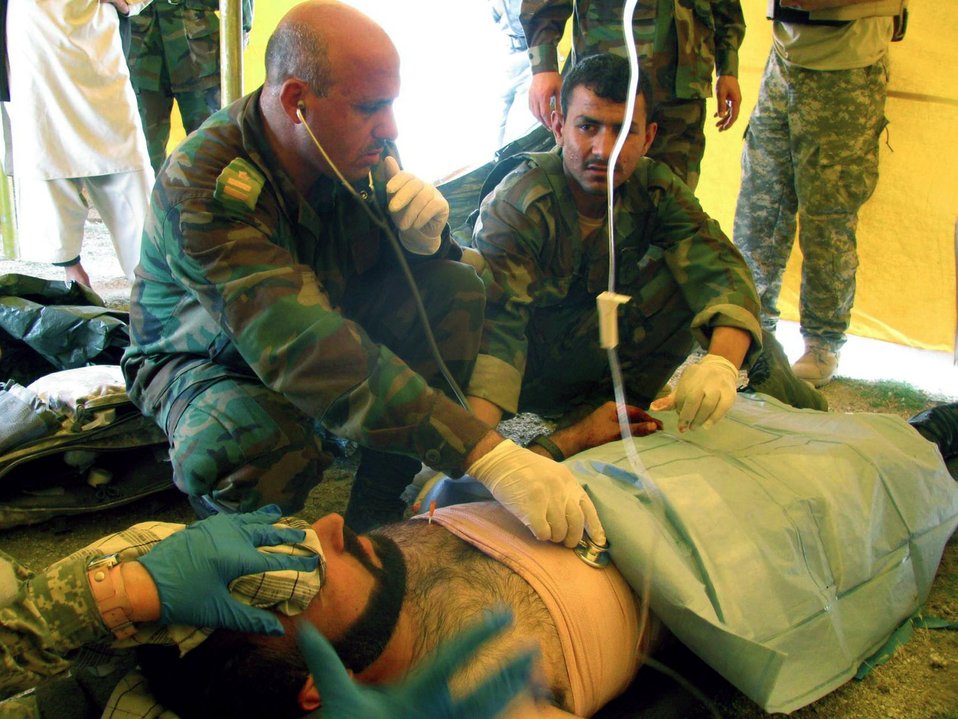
Reconstruction team helps Afghans

Dr. Mohammad Yasuf treats a wounded Afghan national police officer successfully stabilizing him after the officer received a gunshot wound May 7 in the Laghman Province in Afghanistan. Dr. Yasuf, an Afghan national army doctor, and Laghman Provincial Reconstruction Team medics were engaged in a joint-medical outreach in the Sangar Valley at the time. The Afghan national police were conducting an unrelated poppy-eradication mission a few kilometers away when the officer was wounded.